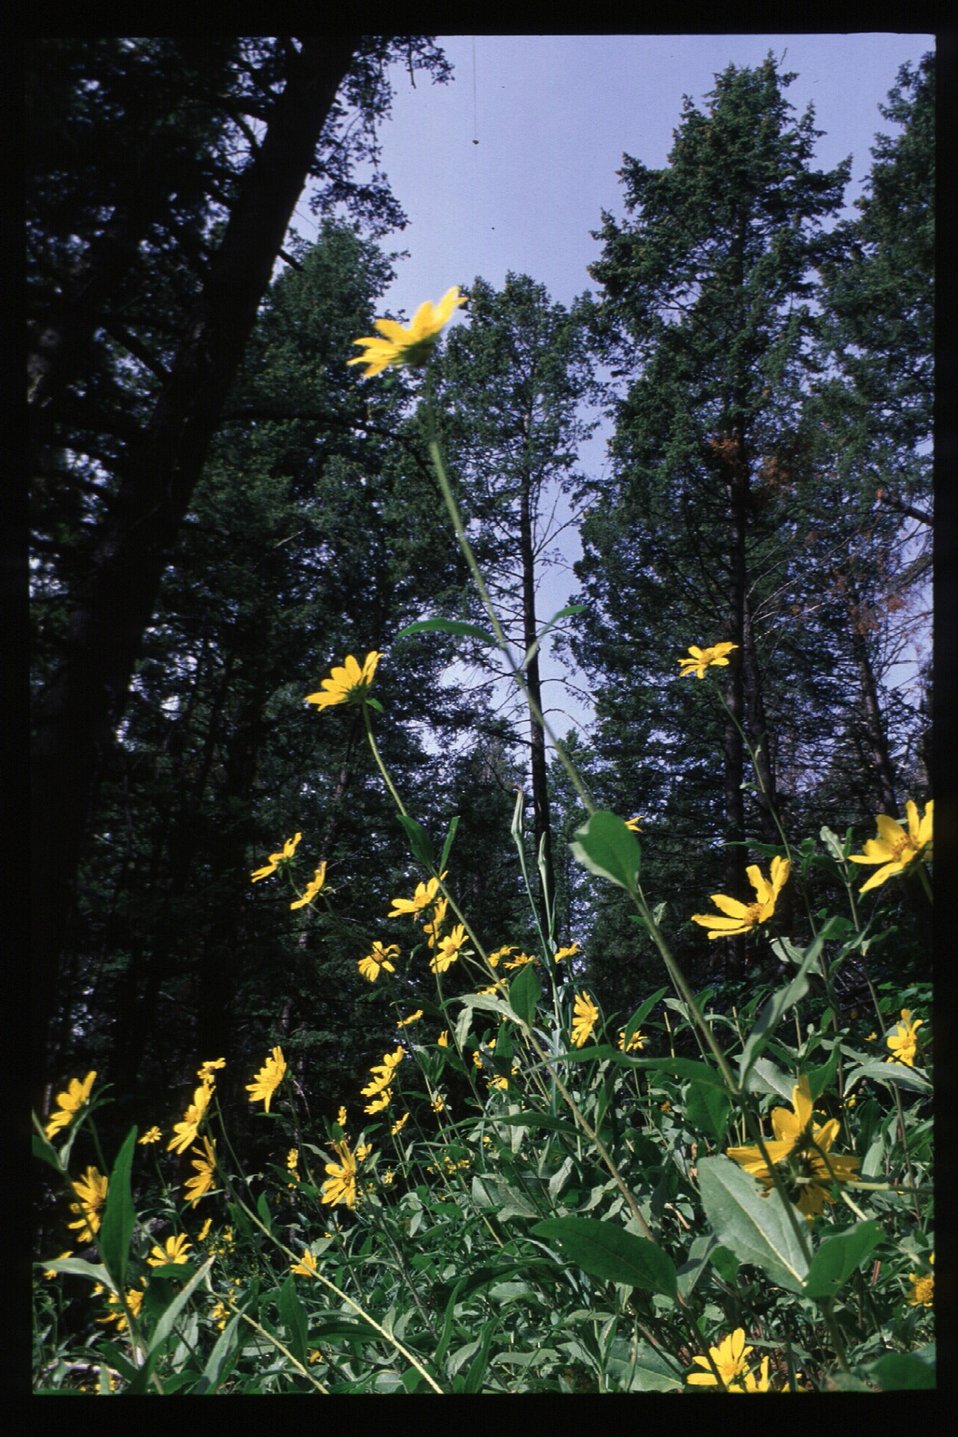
Recreation Shoshone Field Office USRD Upper Snake River District Bald Mountain Trail Wildflowers